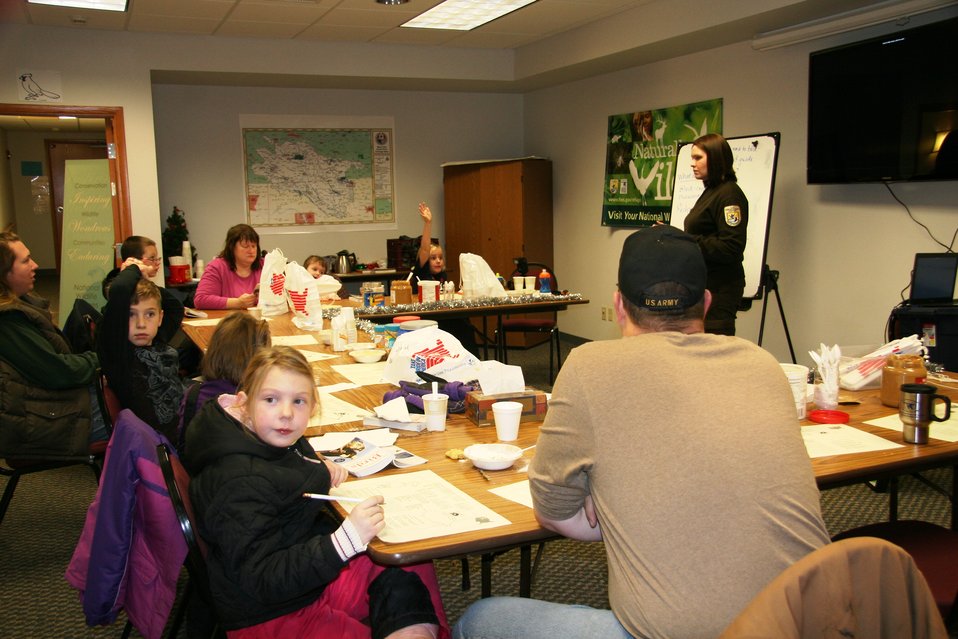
Learning about the Christmas Bird Count

The group discusses about National Audubon Society Christmas Bird Count tradition and why it is important for birds.